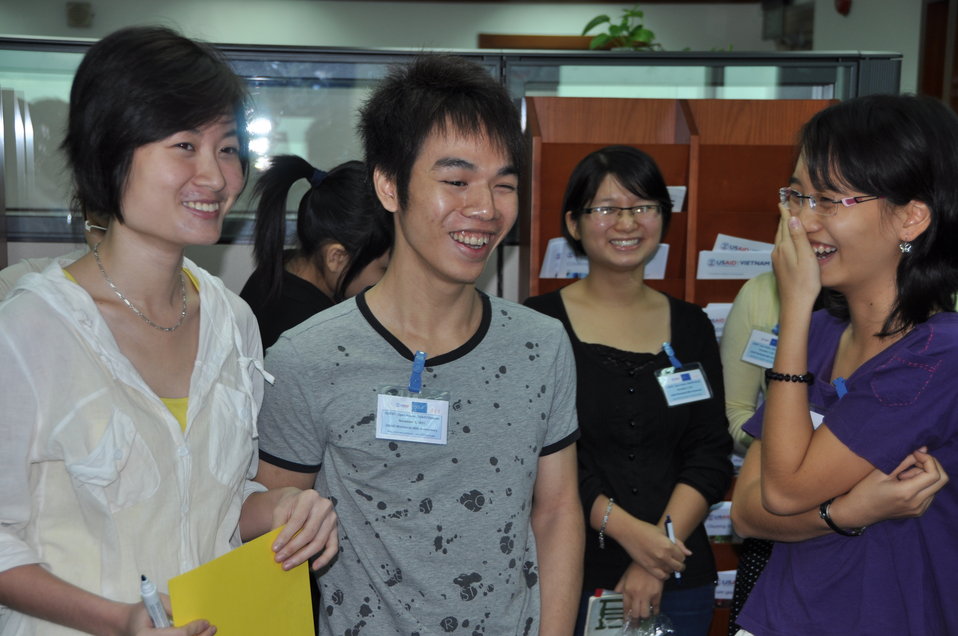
USAID 50th Anniversary Open House, USAID Vietnam